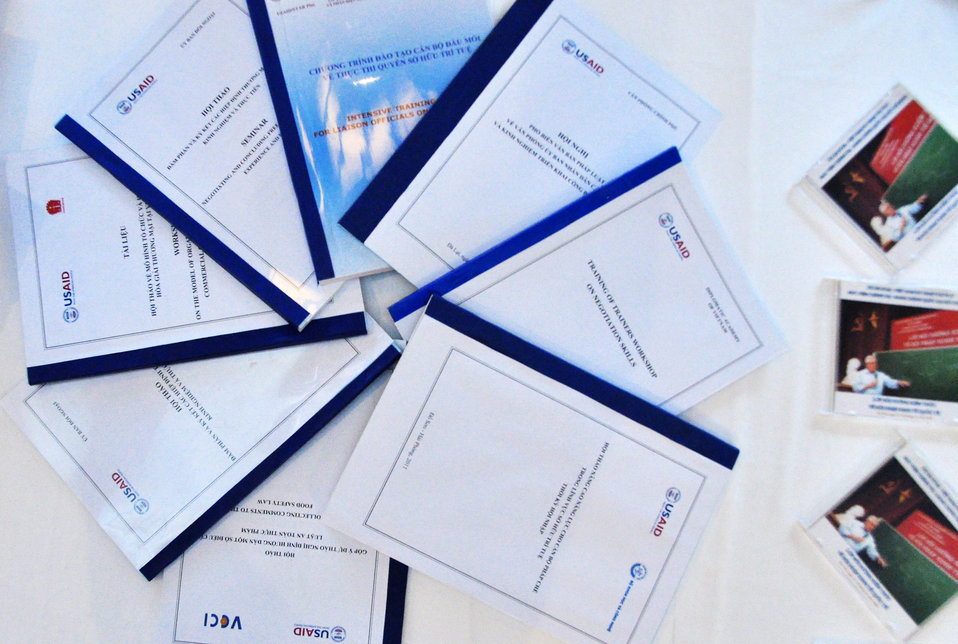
USAID's Support for Trade Acceleration Project (USAID STAR Plus) Closing Ceremony

Hanoi, August 26, 2013.